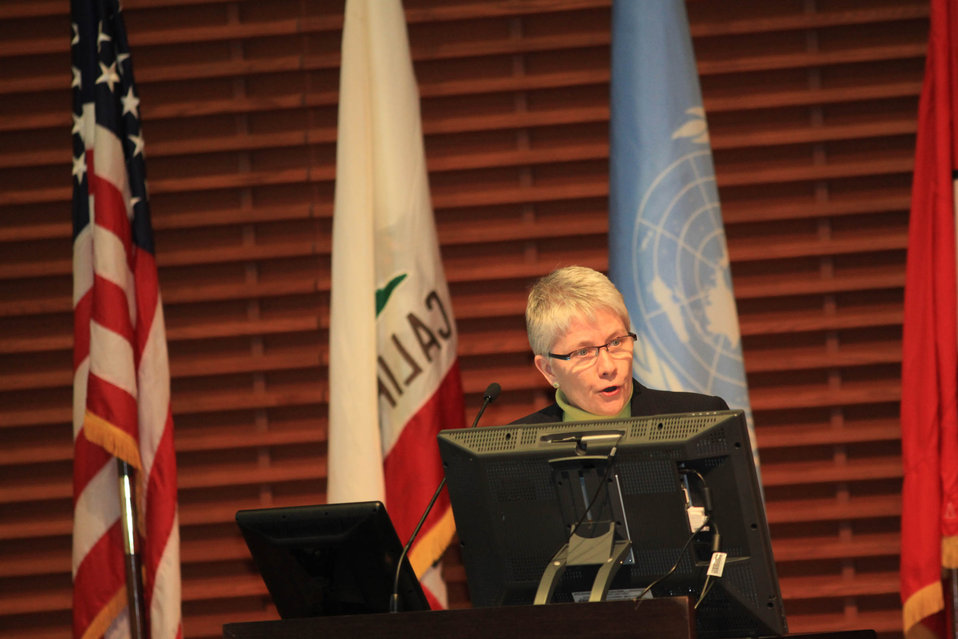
Assistant Secretary Jones Introduces EPA Administrator Jackson

Assistant Secretary of State for U.S. Department of State - Bureau of Oceans, Environment and Science Dr. Kerri-Ann Jones introduces Environmental Protection Agency (EPA) Administrator Lisa P. Jackson at the USRIO 2.0 conference at the Stanford Graduate School of Business Knight Center in Stanford, California, on February 3, 2012.